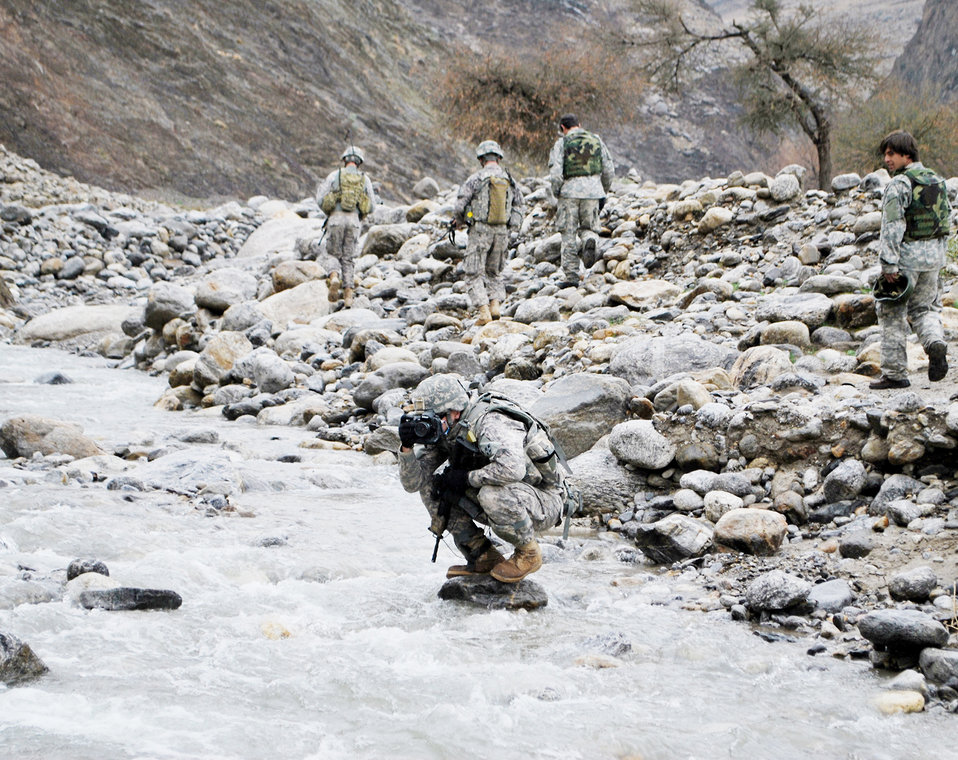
Balancing act

Staff Sgt. Steven Doty, a combat photographer for the Nuristan Provincial Reconstruction Team, snaps a photo of the rest of the team crossing a river in the Sundurwa village, March 3, 2010. The Nuristan PRT went to the Sundurwa village to conduct an engineer assessment on a retaining wall for the village to protect against future flash floods.